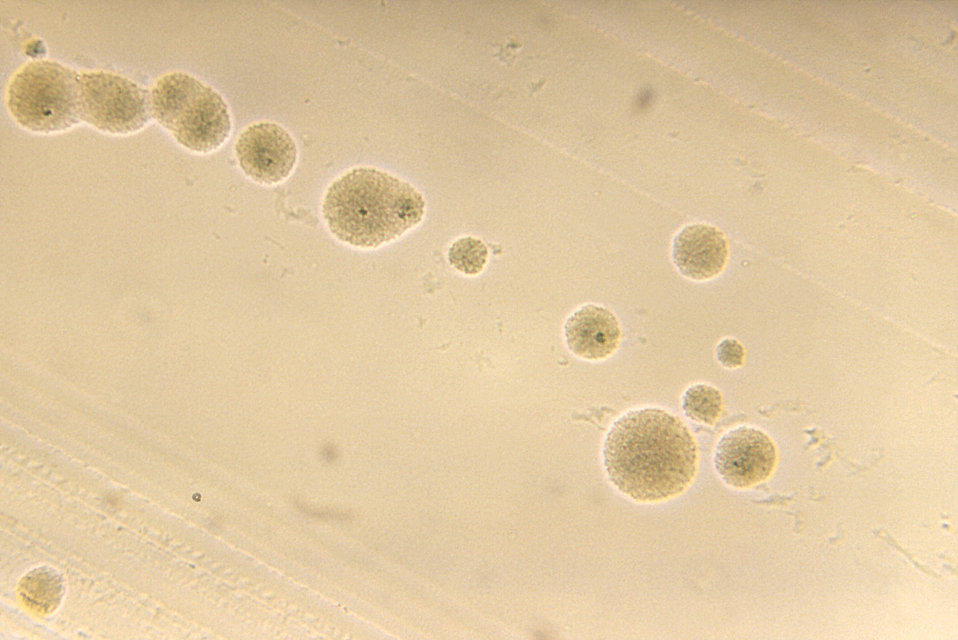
Magnified 125X, this photomicrograph revealed some of the morphology exhibited by a number of Actinomyces viscosus microcolonies that had been cultured in a Petri dish atop a medium of brain heart infusion agar (BHIA), for a 48hrs period.